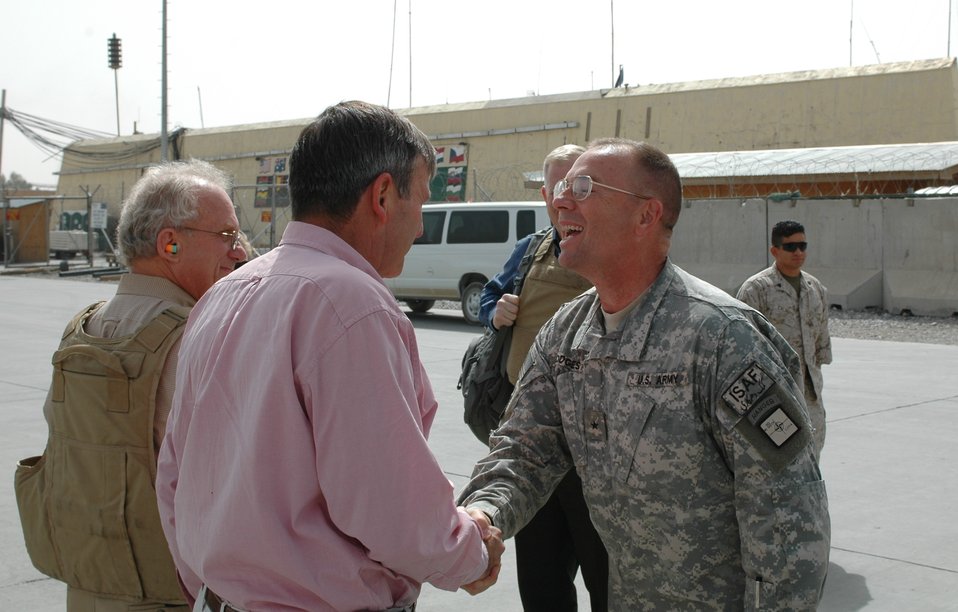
CODEL Berman